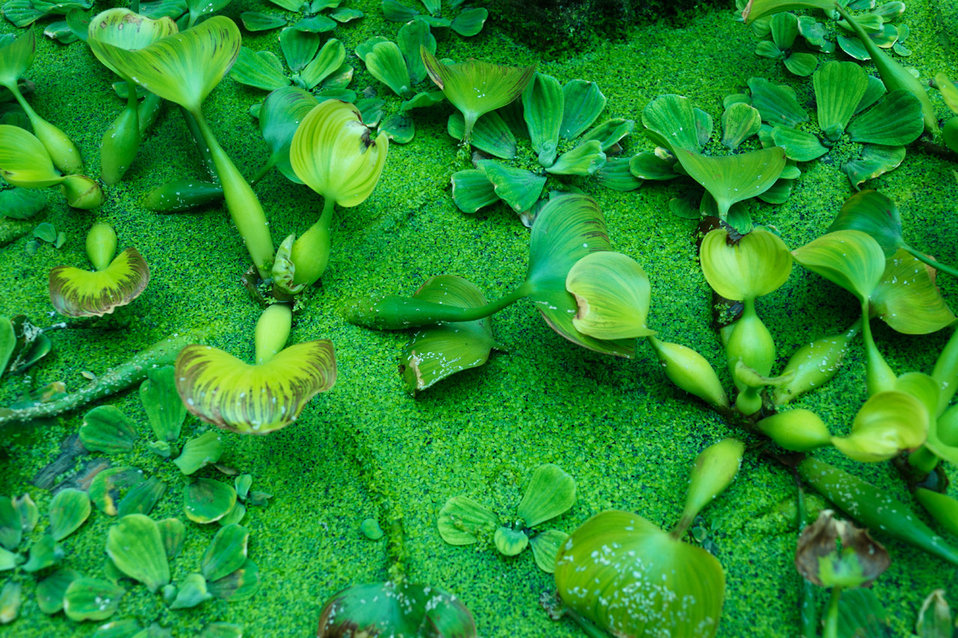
Green water plants background.